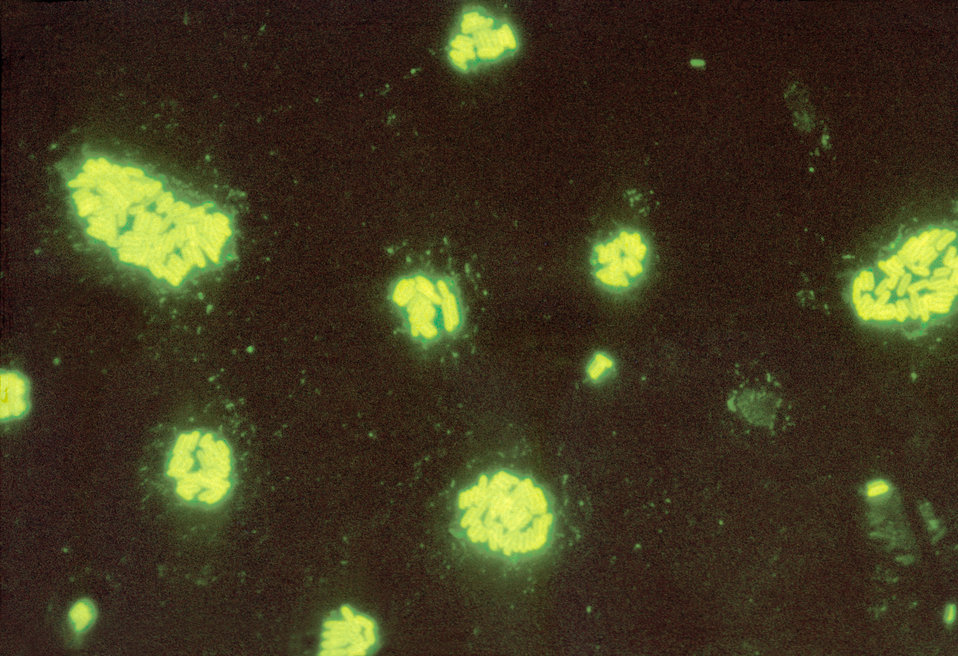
Salmonella bacteria in tetrathionate enrichment broth stained using direct FA staining technique.